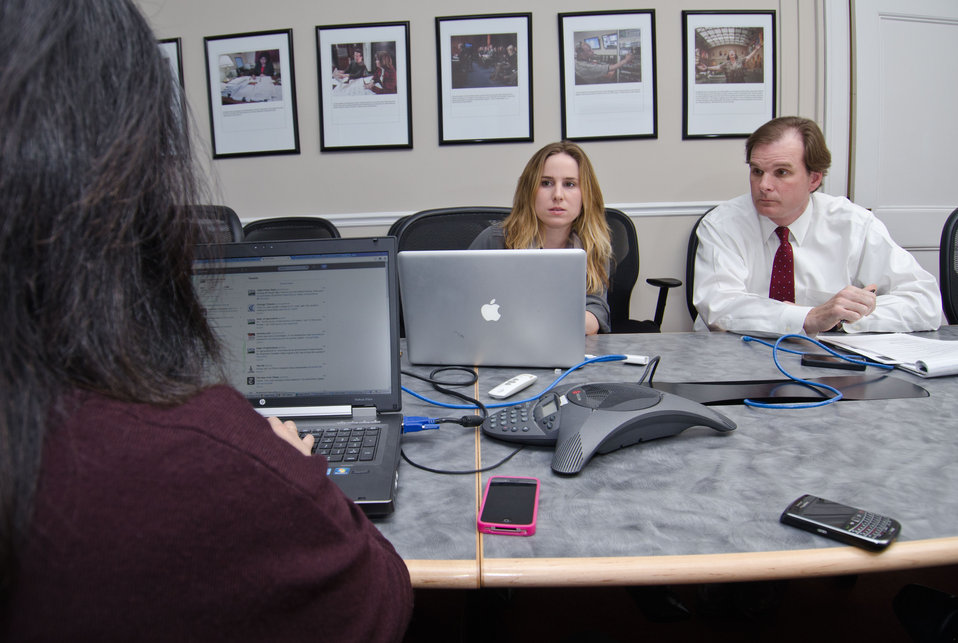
(Left to right) U.S. Department of Agriculture Office of Communications Deputy Press Secretary Stephanie Chan discuss useful links to support a persons online question, with Director of Web Communications Amanda Eamich and Senior Advisor to the Secretary for Environment and Climate Change Robert Bonnie as he hosts a live Virtual Office Hours session on Twitter, in Washington, D.C. on Thursday, November 29, 2012. Online questions about U.S. Department of Agriculture's (USDA) record on conservation achievements and efforts to reconnect Americans to the great outdoors were answered during the event. Questions were submitted live and in advance to the @USDA Twitter account using the hashtag #AskUSDA.